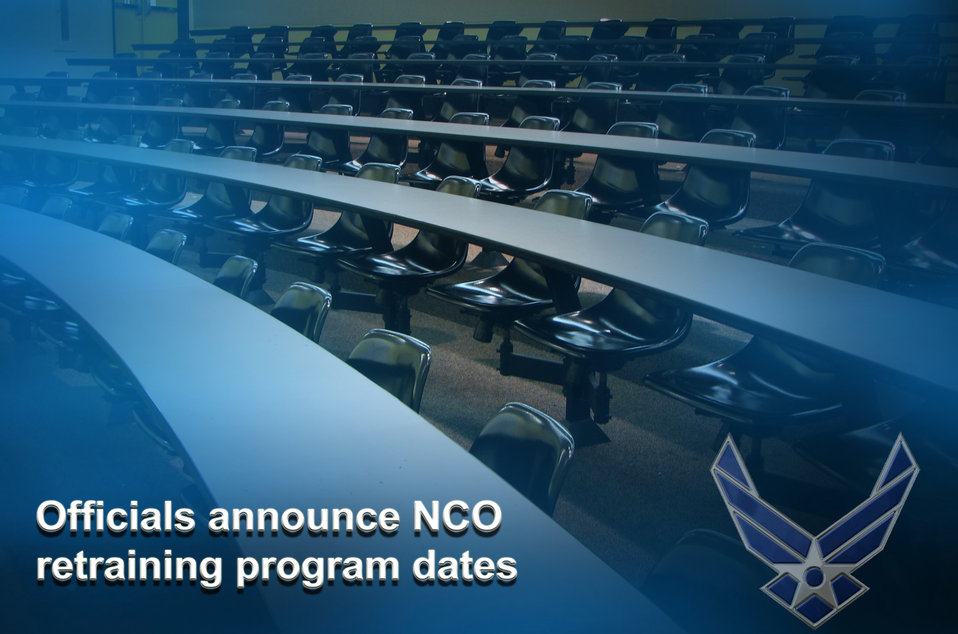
NCO retraining program